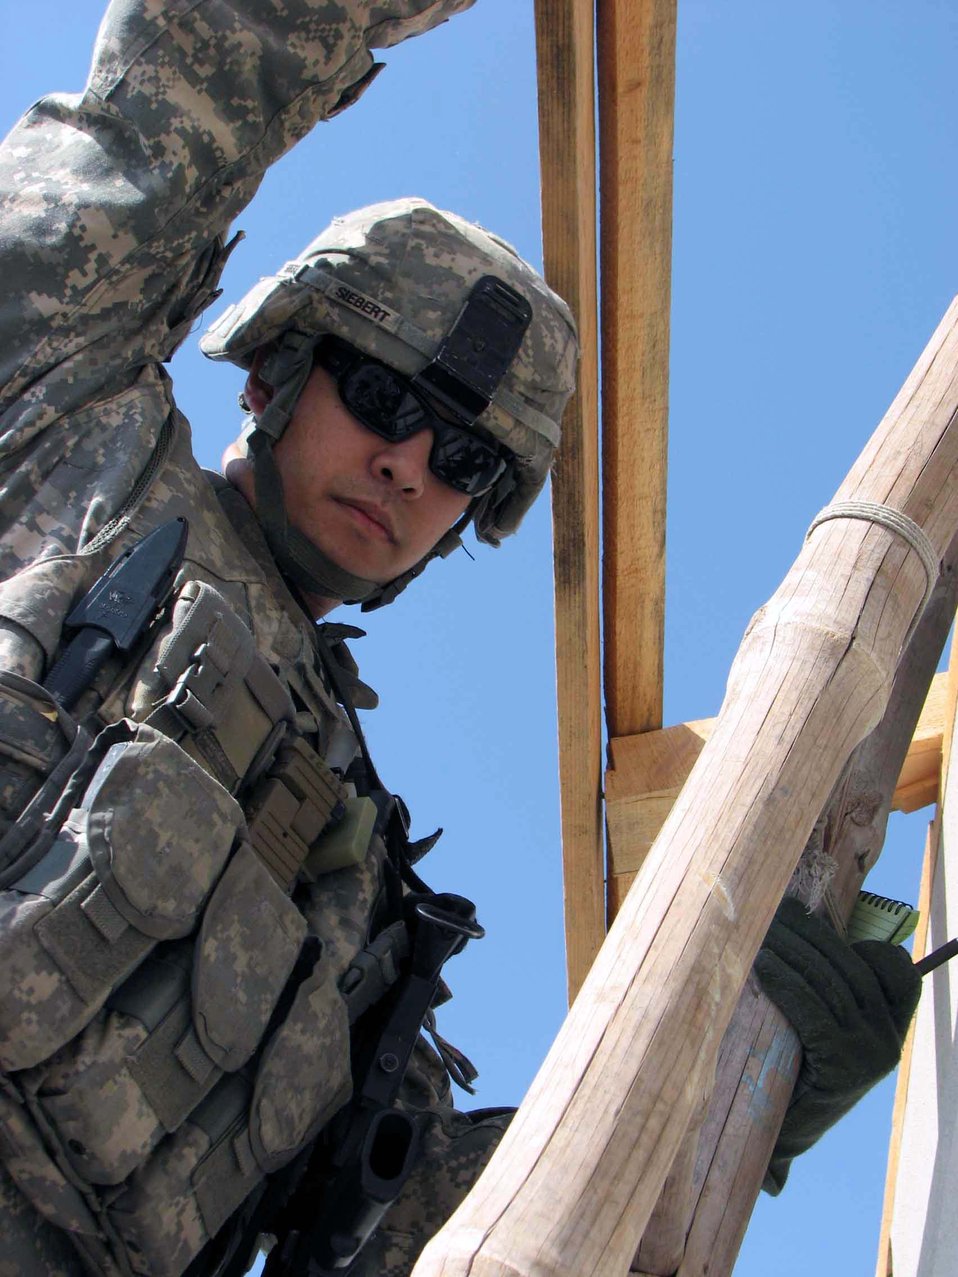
American servicemembers take reconstruction to new level

Capt. Michael Siebert inspects the roof of a veterinarian clinic Nov. 3 in Jalalabad City, Afghanistan. He is part of the Nangarhar Provincial Reconstruction Team that is made up of Airmen and Soldiers from around the world and charged with assisting the provincial government in improving security, governance and reconstruction.